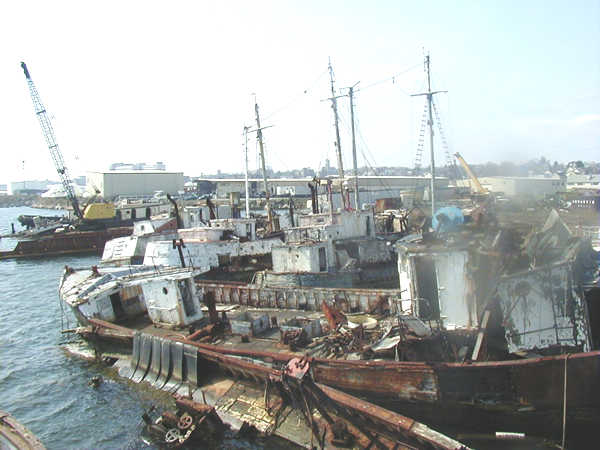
March - July 2002, Abandoned vessels cast an eery glow

EPA worked to demolish and remove ten wooden boats, one steel tug, and several barges from the former Herman Melville Shipyard to allow the relocation of a marine terminal that was formerly located at the current de-watering area.

The boats were removed to make way for the dredging of PCB-contaminated harbor sediment and this effort had additional cleanup benefits for the shoreline as well.

Work began in March 2002 and was complete in July 2002.